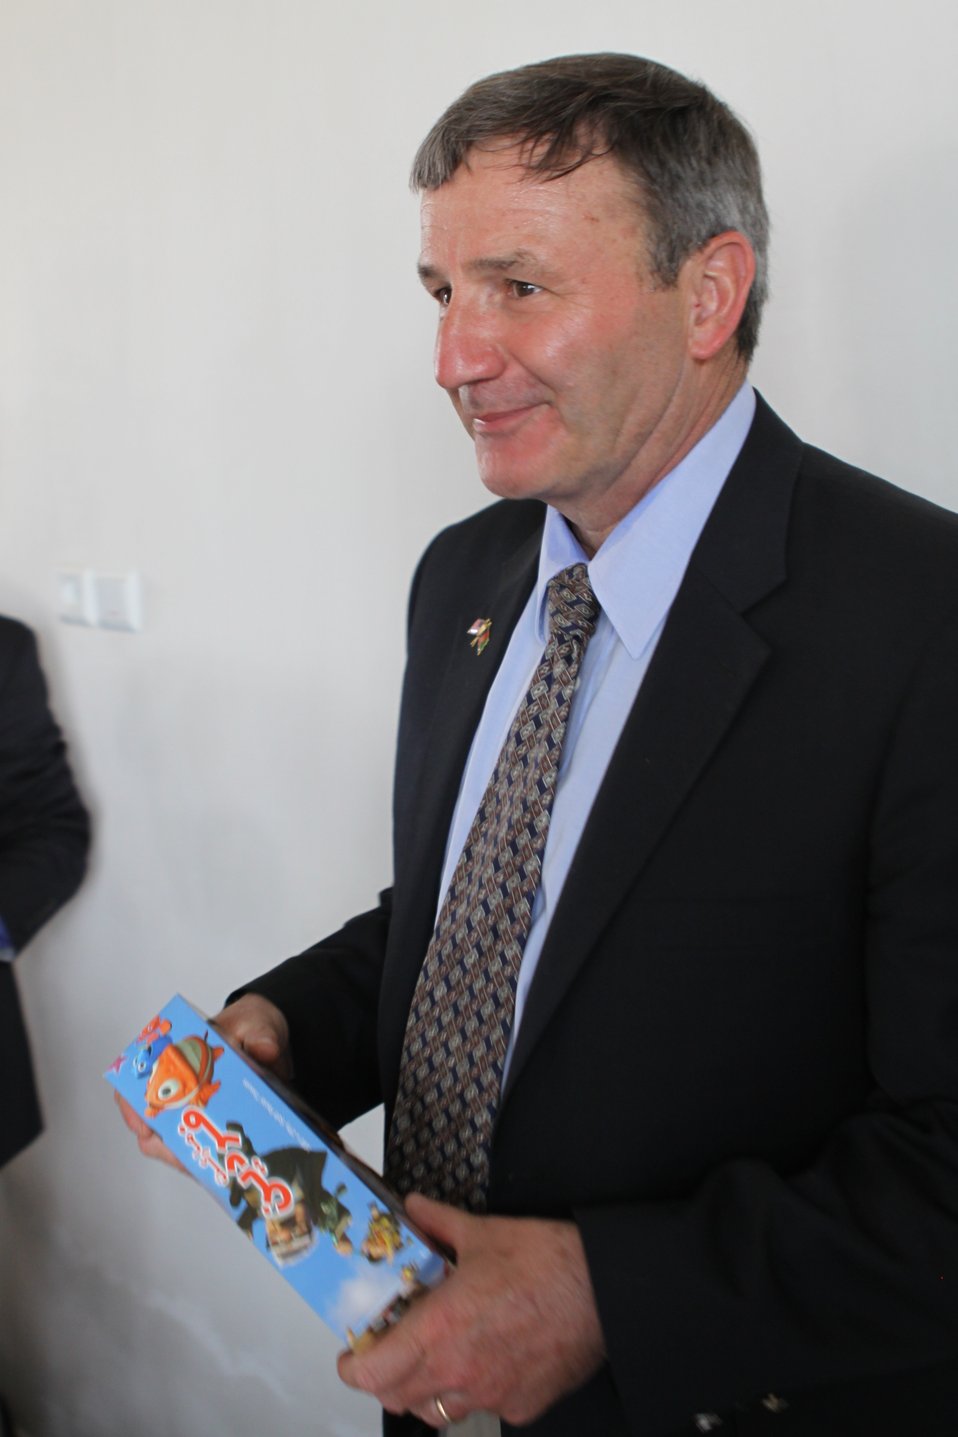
100525 Hirat Marble Conference 847